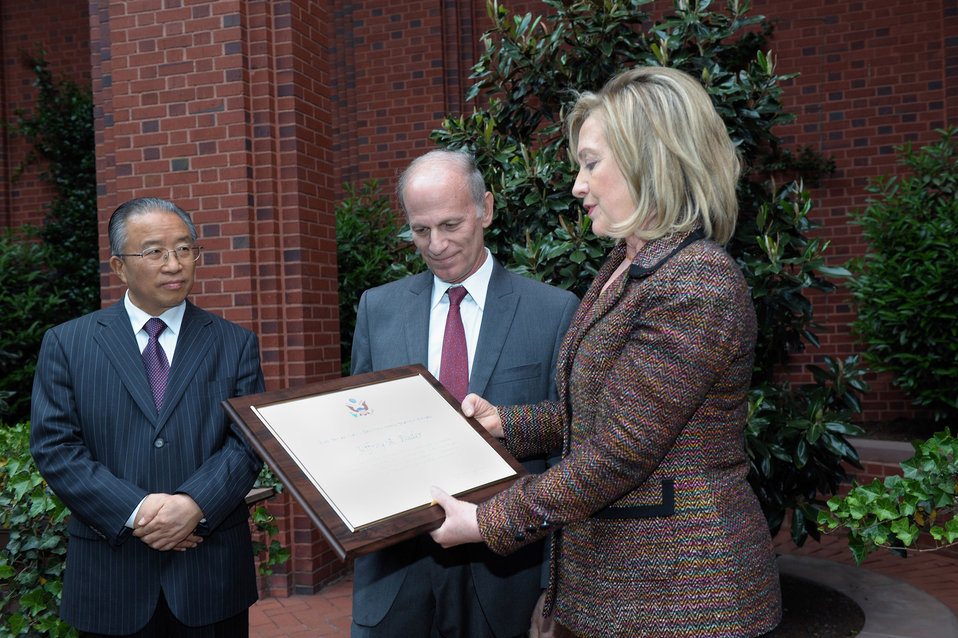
Secretary Clinton and Chinese State Councilor Dai Bingguo Present Jeffrey Bader With the Secretary's Distinguished Service Award

U.S. Secretary of State Hillary Rodham Clinton and Chinese State Councilor Dai Bingguo present Jeffrey Bader with the Secretary’s Distinguished Service Award, at the Blair House in Washington, D.C., on May 8, 2011.